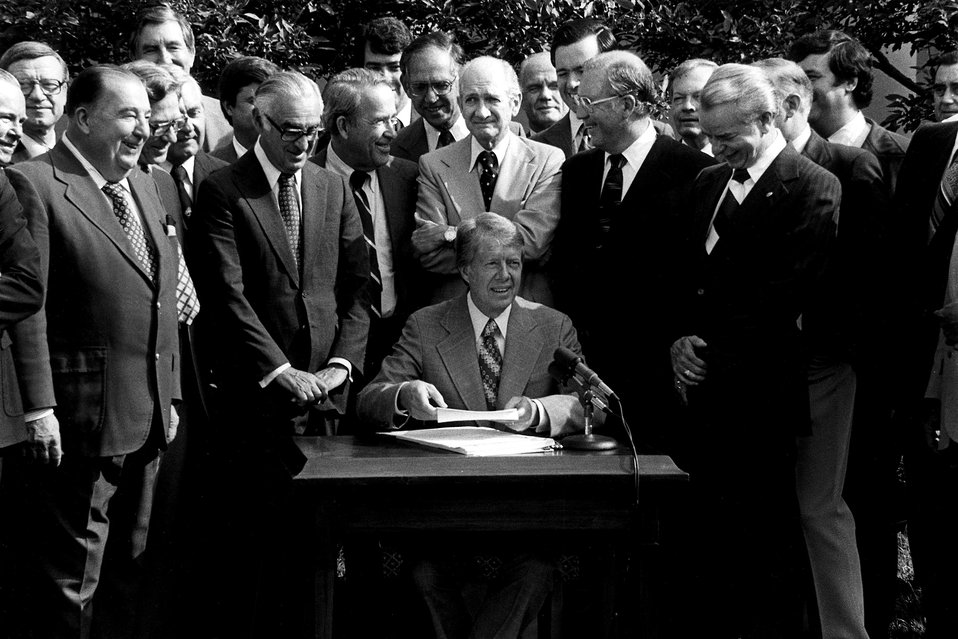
President Carter signed Department of Energy Organization Act on August 4, 1977, in the Rose Garden at the White House.